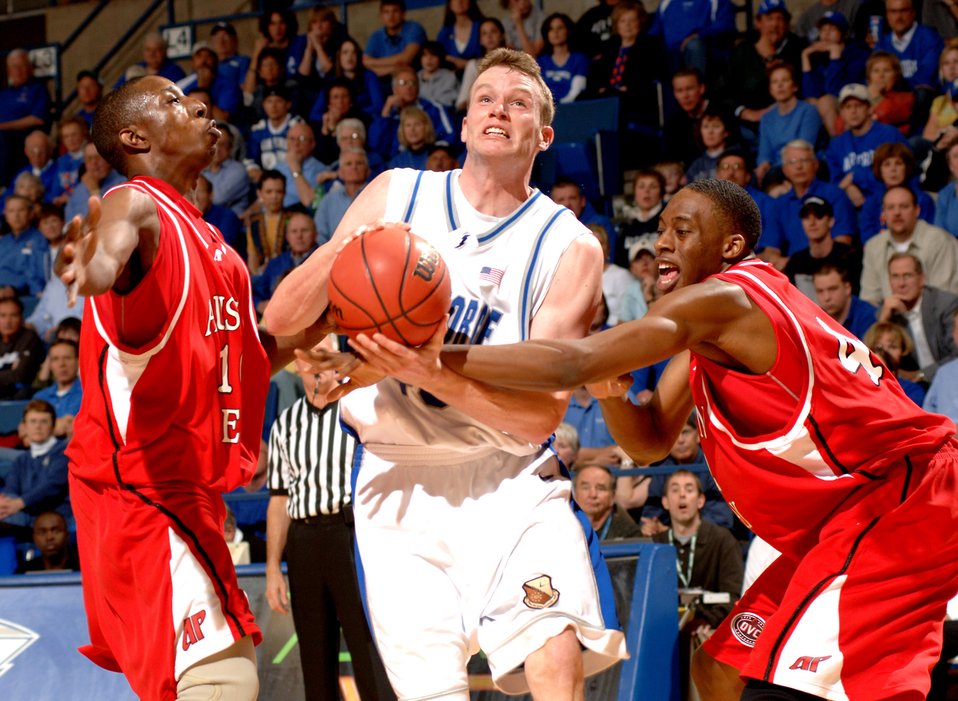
Falcons fly high in NIT debut

Air Force center Nich Welch is fouled by Austin Peay defender Duran Roberson as he drives to the basket March 14 during the first round of the National Invitational Tournament. The Falcons defeated Austin Peay 75-51 at the Air Force Academy's Clune Arena, and advanced to the second round against Georgia.